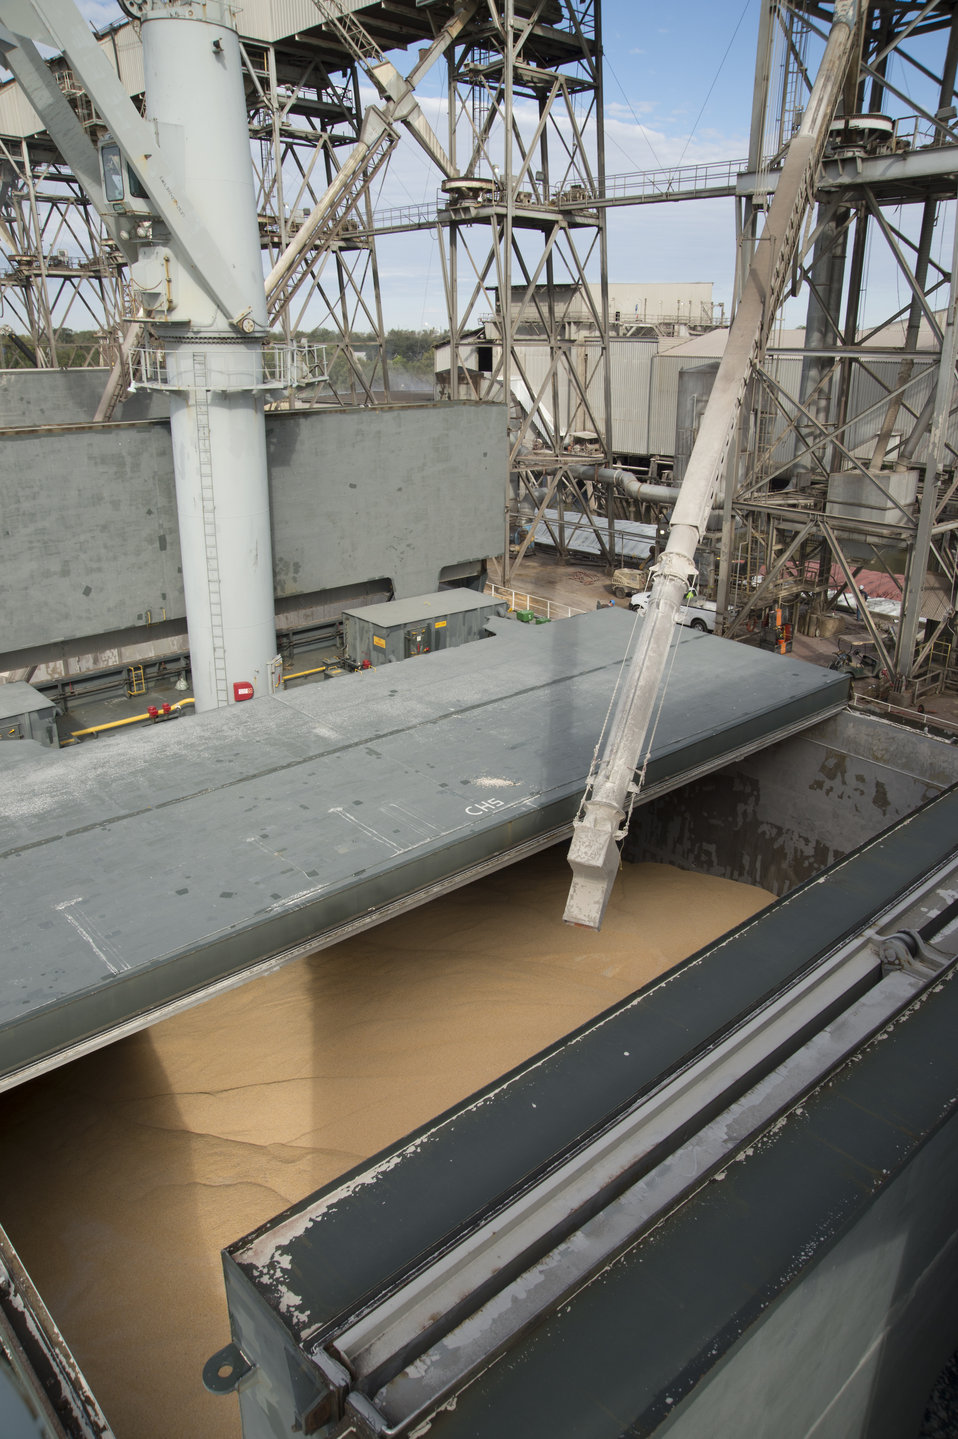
Grain is transferred from barges to to storage facilities near the Port of New Orleans in New Orleans, LA on Tuesday, Nov. 19, 2013.